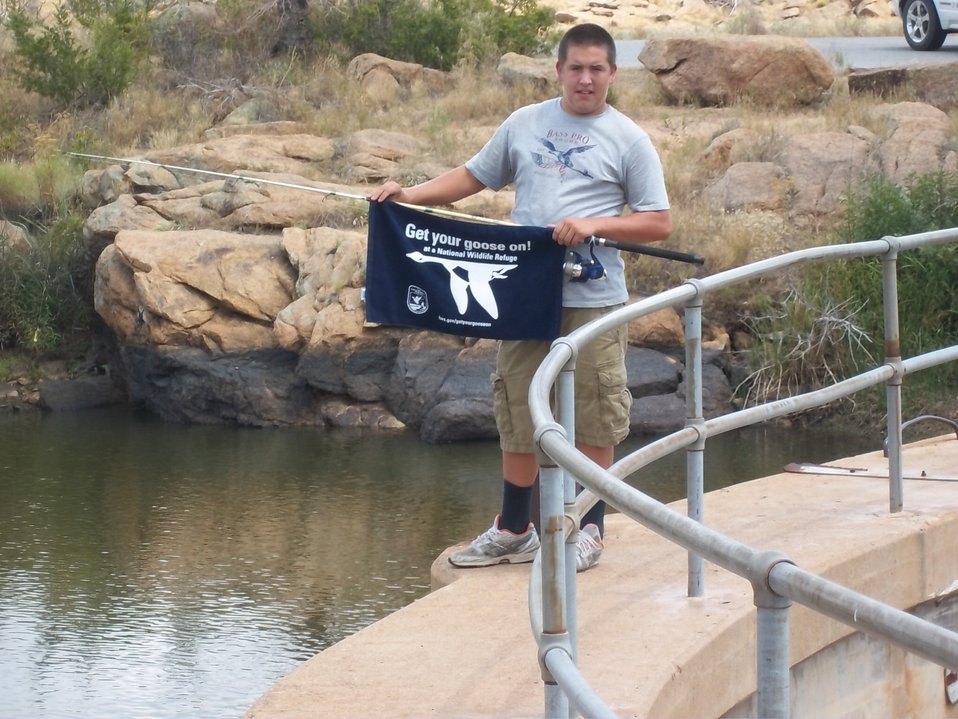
Get Your Goose On!

Wichita Mountains National Wildlife Refuge in Oklahoma.